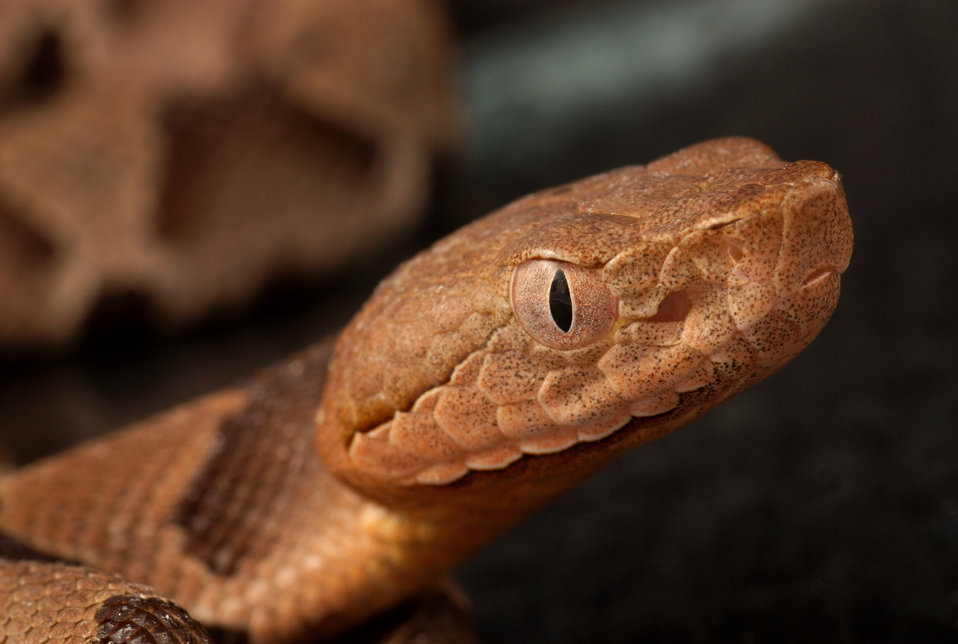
This 2008 photograph depicted a juvenile venomous 'Southern copperhead' snake, Agkistrodon contortrix, as it was coiled in a Decatur, Georgia basement.